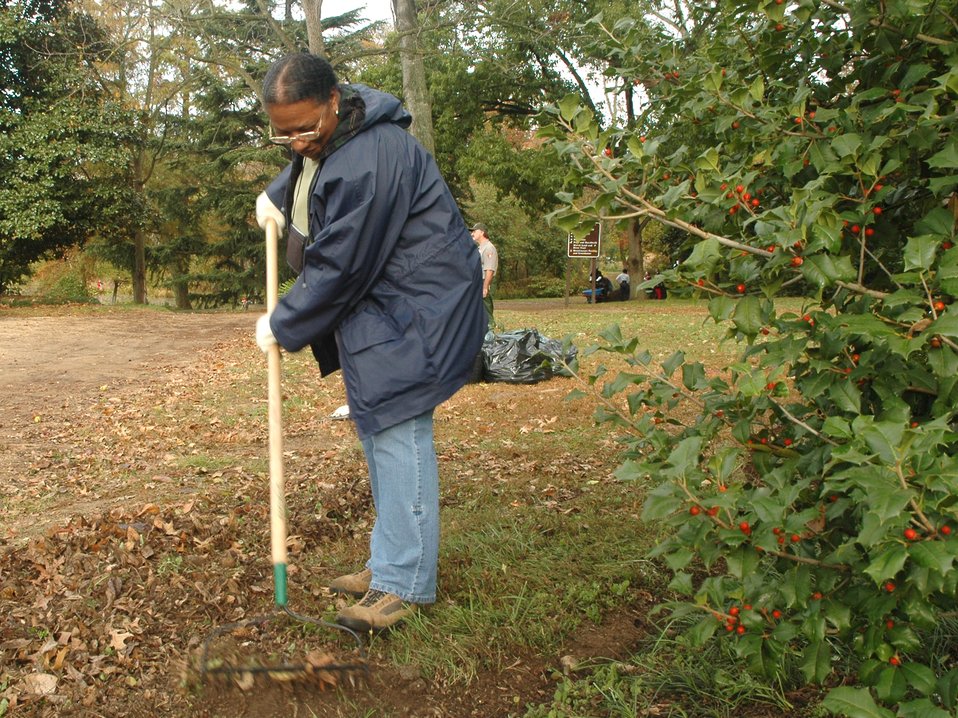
Servicemembers make a difference

Mary S. Lee rakes leaves Oct. 25 at Kenilworth Aquatic Garden in Washington, D.C. Ms. Lee and her husband, Michael V. Lee, Air Force District of Washington, volunteered at the garden with Airmen, Sailors and Soldiers from the National Capital Region as part of a joint service project for national